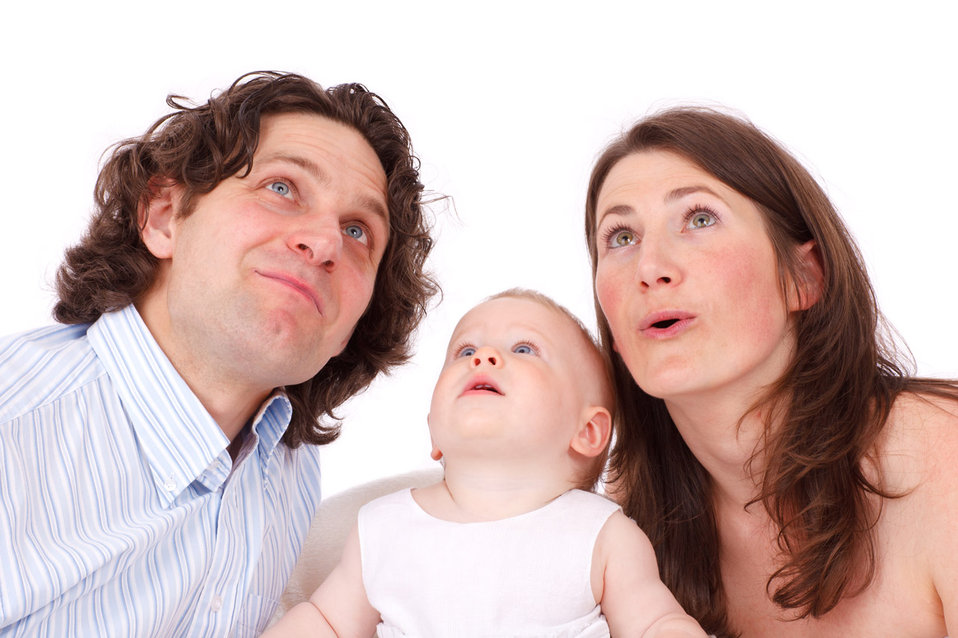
Young family looking up isolated on white background.